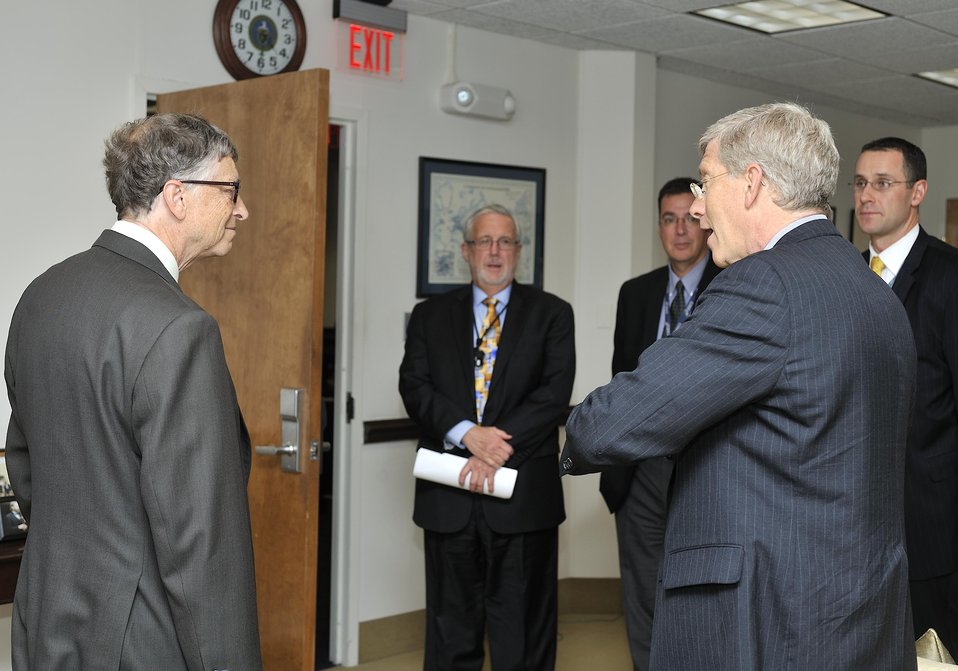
Ken Shipp/DOE Photo

Deputy Secretary D. Poneman is visited by W. (Bill) H. Gates, founder, technology advisor of Microsoft Corporation at The Department of Energy on October 8, 2013.